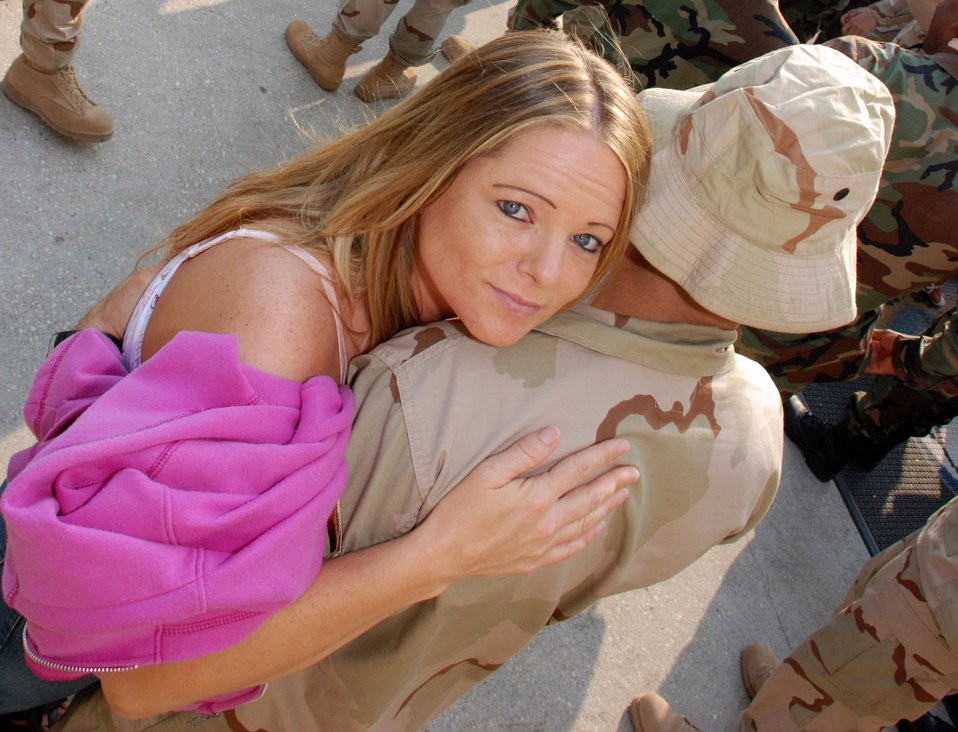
Home at last!

Jeni Zayas welcomes home her husband, Master Sgt. Roberto Zayas, May 24 from a deployment to Southwest Asia. Family members at Eglin Air Force Base, Fla., gathered to welcome home members of the 728th Air Control Squadron from a deployment in support of Operation Iraqi Freedom.